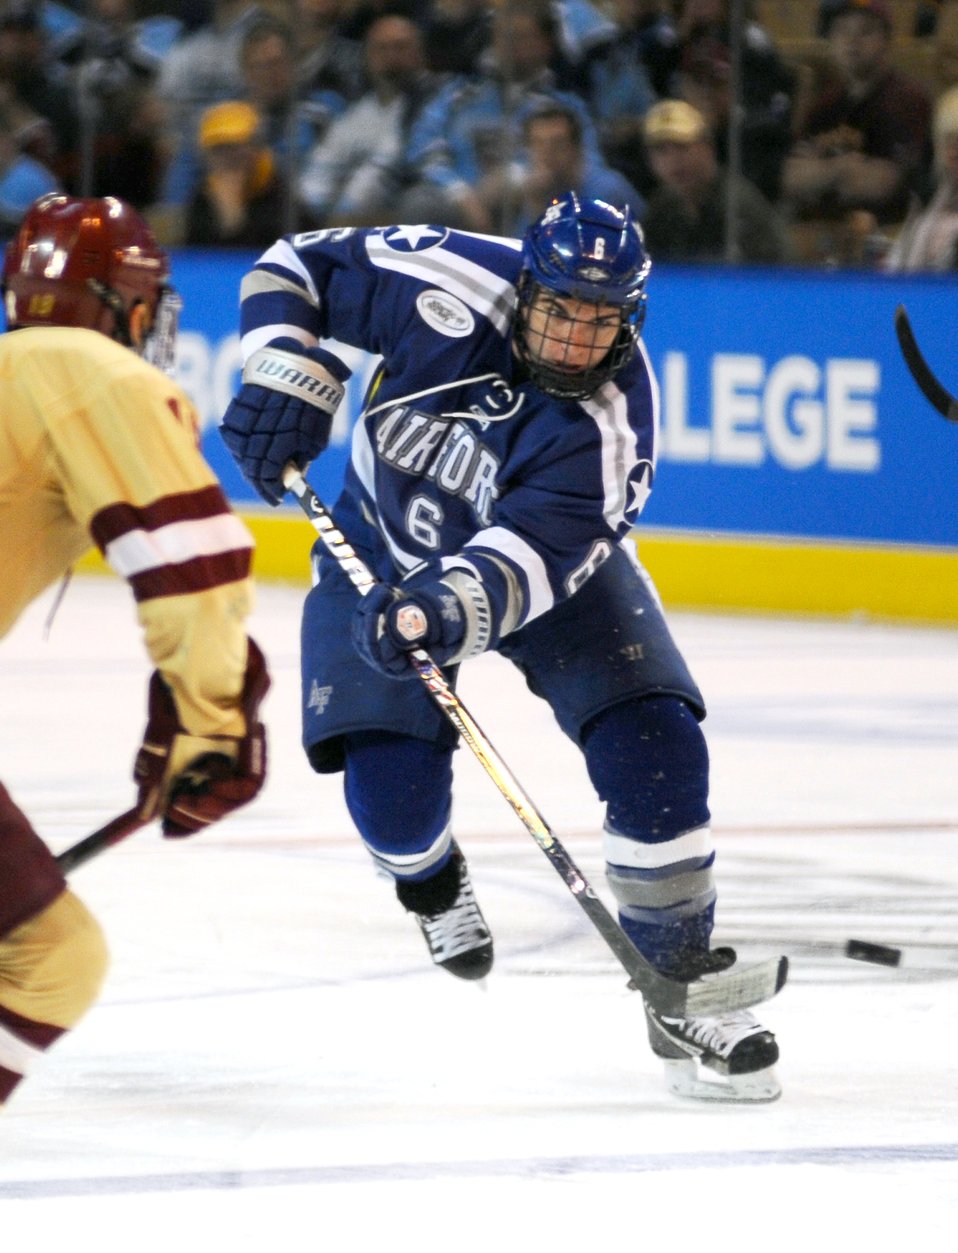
Falcons fall to Eagles in another tournament heartbreaker

Air Force Academy Falcons’ defenseman Adam McKenzie pushes the puck up the ice during the NCAA Hockey Championship Tournament in Worcester, Mass., March 24, 2012. The Falcons came up short against the Boston College Eagles 2-0.